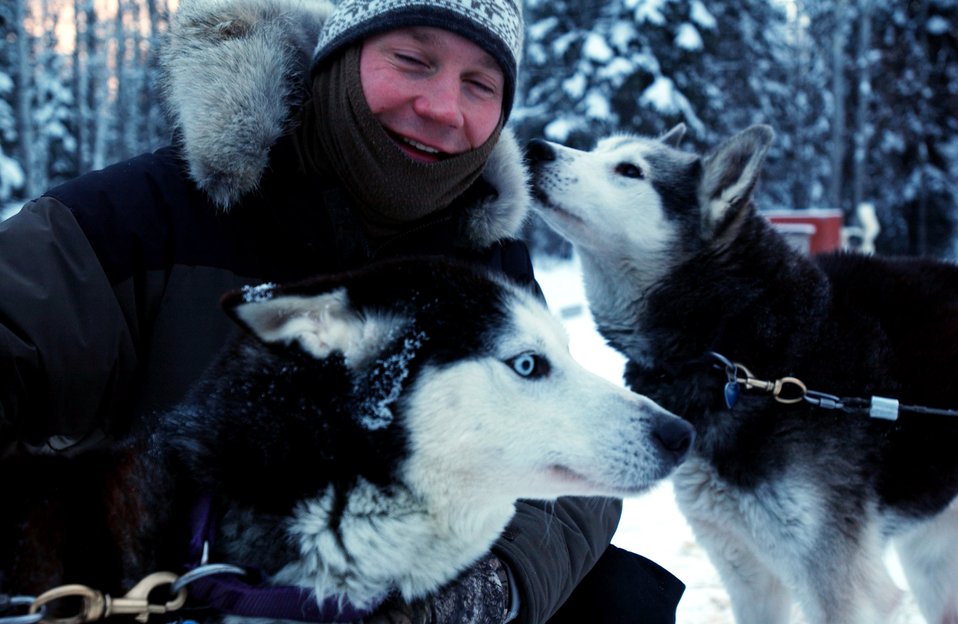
Pilot mushes dogs for noble cause

Maj. Blake Matray enjoys a playful moment with his racing sled dogs Whit (left) and Boomer (right) before preparing them for practice Jan. 10 in Alaska. Major Matray operates the Sled Dog Fund, Inc., a non-profit organization which uses dog sledding racing events to promote awareness and raise funds for disabled children. He is a 168th Air Refueling Wing KC-135 Stratotanker pilot at Eielson Air Force Base, Alaska.